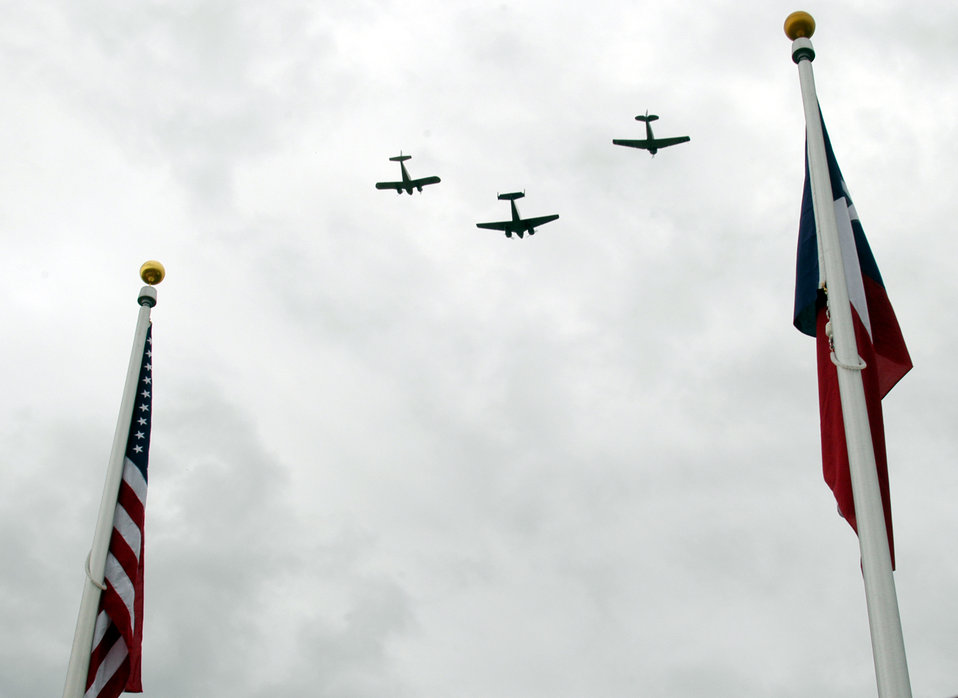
World War II women warriors pass on history, heritage

AVENGER FIELD, Texas -- Vintage World War II aircraft perform a missing Women's Airforce Service Pilots formation over the opening ceremonies of the National WASP World War II Museum here May 28. In service of their country, 38 of the pilots died while performing of their duties.